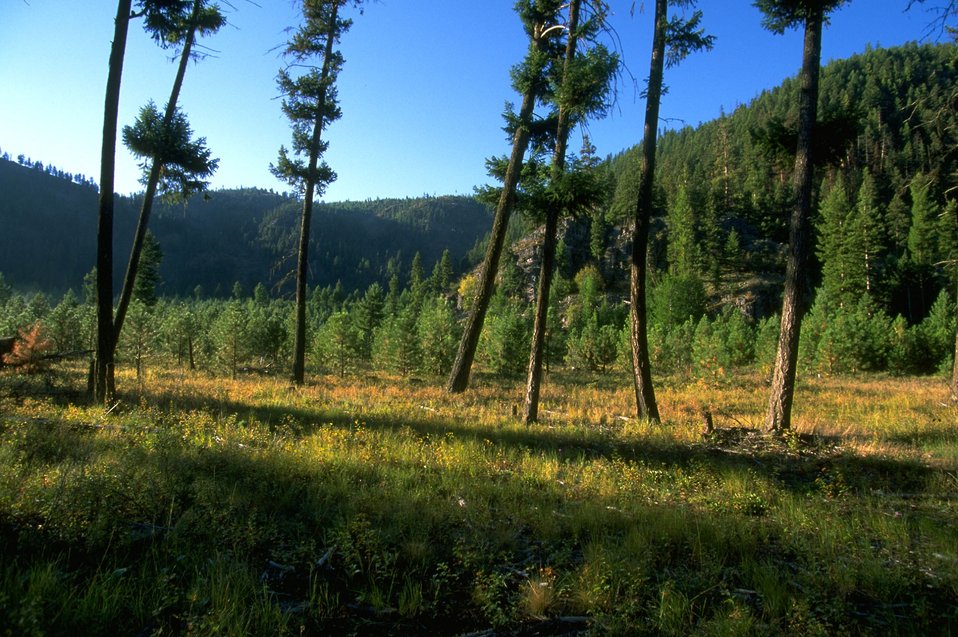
Daigles Eddy day-use area along the Blackfoot River